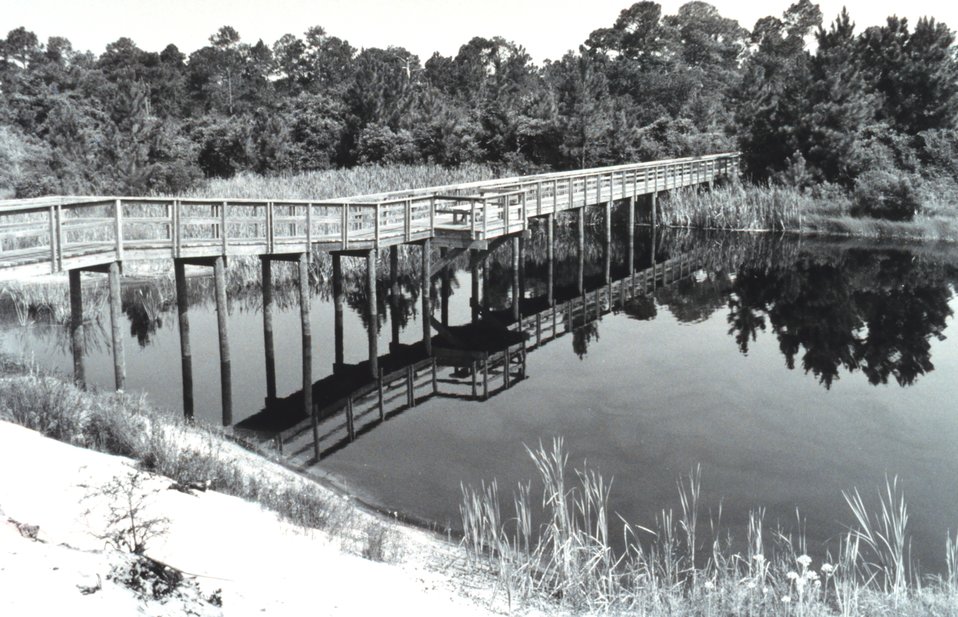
Along the nature walk at St. Joseph Peninsula State Park